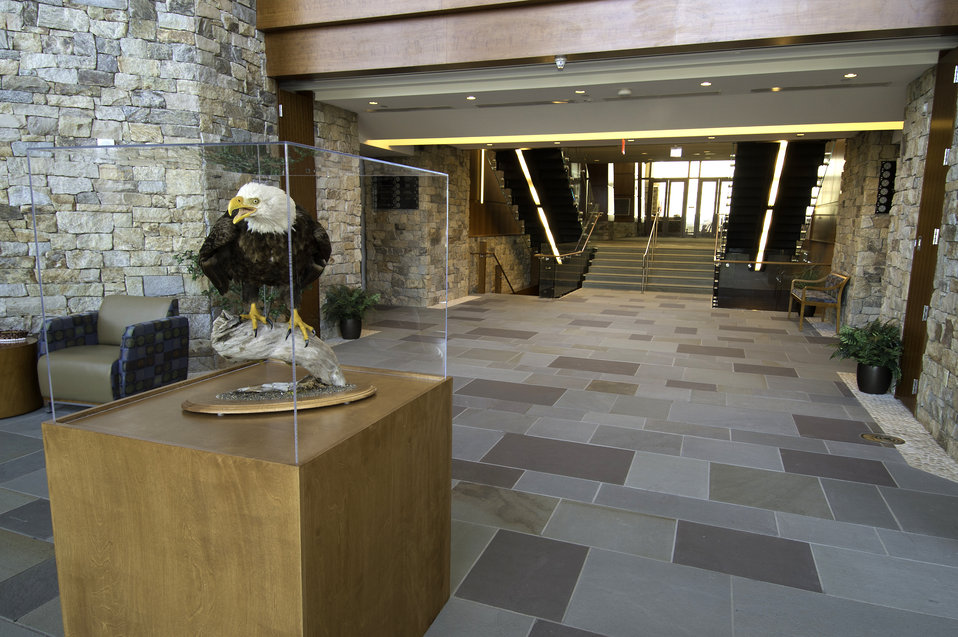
The atrium entrance to the Mohegan Tribe Community Center and Government Building has Bald Eagle on display in Uncasville, CT on Nov. 19, 2013. A U.S. Department of Agriculture (USDA) Rural Development (RD) Community Facility Loan was provided to the Mohegan Tribe for the construction of the Mohegan Tribe Community Center and Government Building in Uncasville, CT. USDA’s RD Community Facilities Programs makes and guarantees loans to develop essential community facilities in rural areas and towns of up to 20,000 in population. Loans and guarantees are available to public entities such as municipalities, counties, parishes, boroughs, and special-purpose districts, as well as to non-profit corporations and tribal governments. The 160,000 square foot building Center hosts an exhibit celebrating federal recognition, history of Mohegan Chiefs, a new Library and Archives space, new Arts and Crafts room, a new gymnasium, and a new community room to enjoy food and family. The Center will continue the Tribe’s plan for growth and meeting the needs of its members.